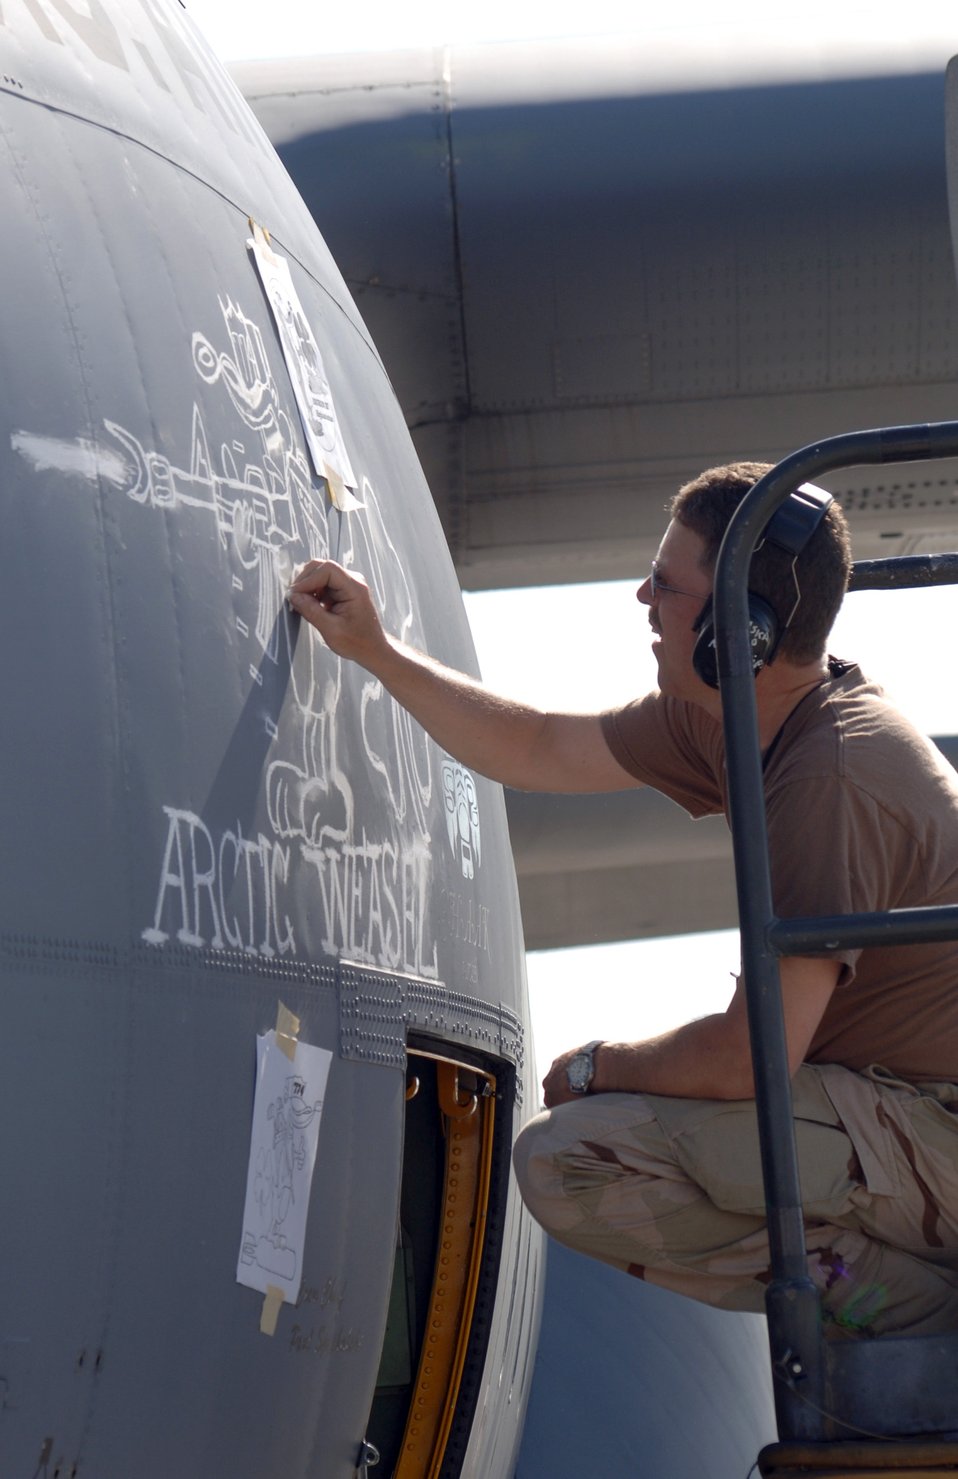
Artist at work

Master Sgt. Michael Phillips draws the 774th Expeditionary Airlift Squadron mascot with chalk on the side of a C-130 Hercules recently at Bagram Air Base, Afghanistan. Sergeant Phillips is assigned to the 455th Expeditionary Aircraft Maintenance Squadron as a C-130 non destructive tester. He is deployed here from Kulis Air National Guard, Alaska.